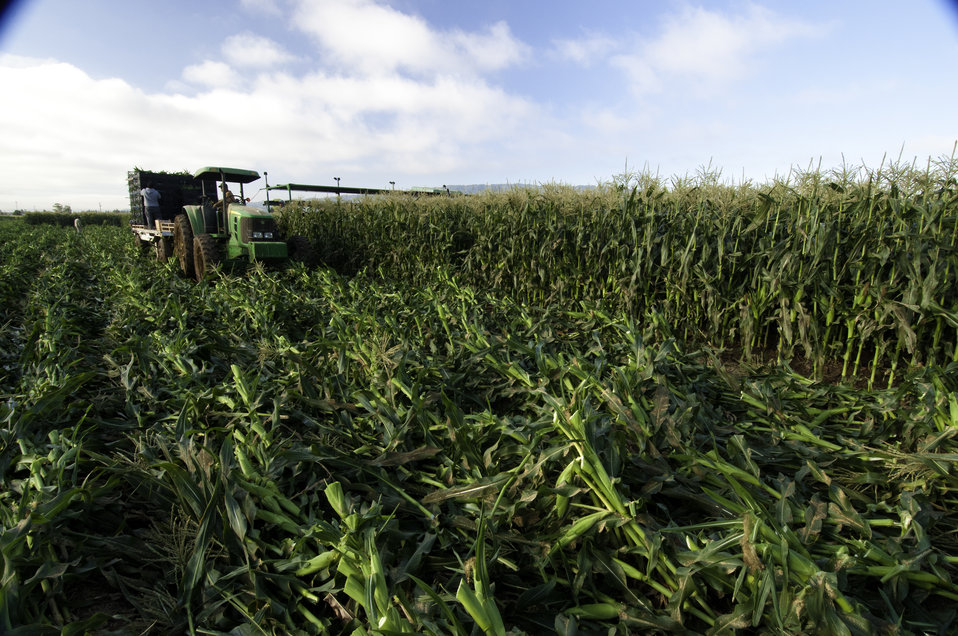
Corn is harvested on Uesugi Farms in Gilroy, CA on Wednesday, Aug. 28, 2013.